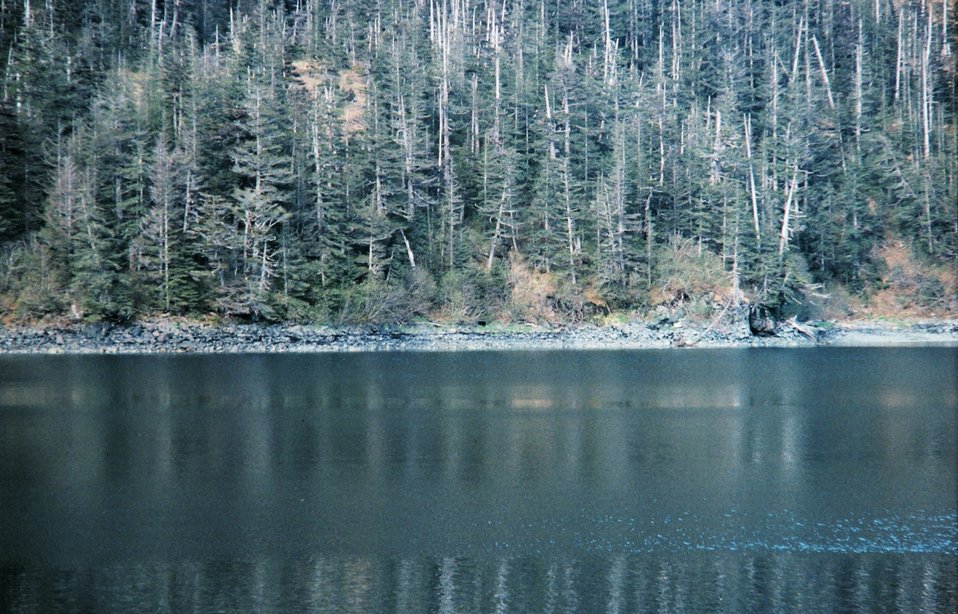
Shoreline in Prince William Sound